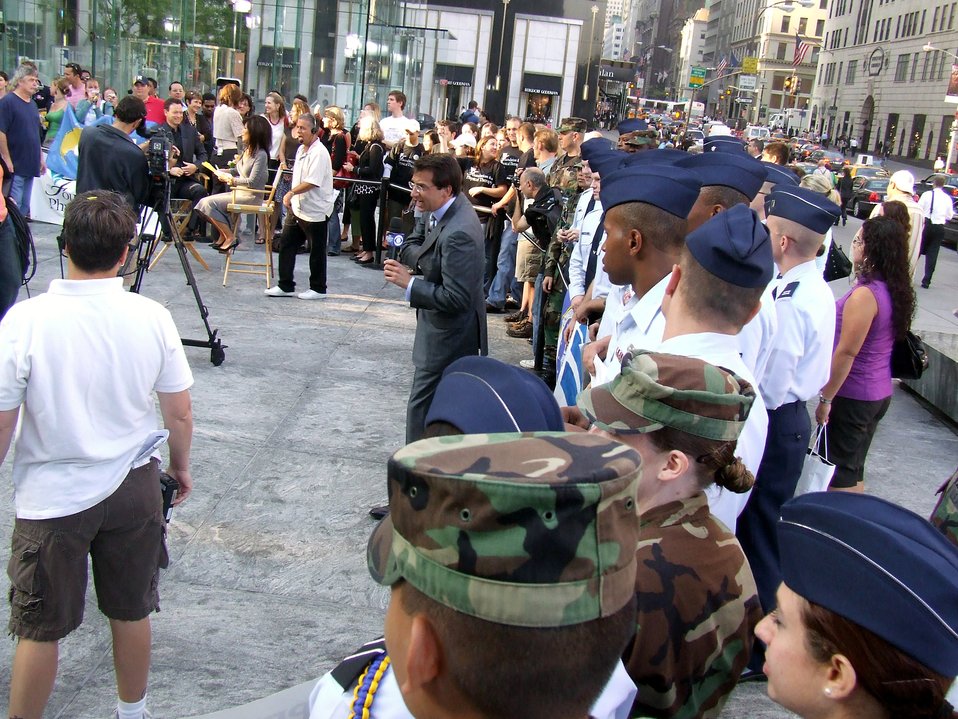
CBS' 'The Early Show' recognizes AF 60th anniversary

Dave Price from CBS'